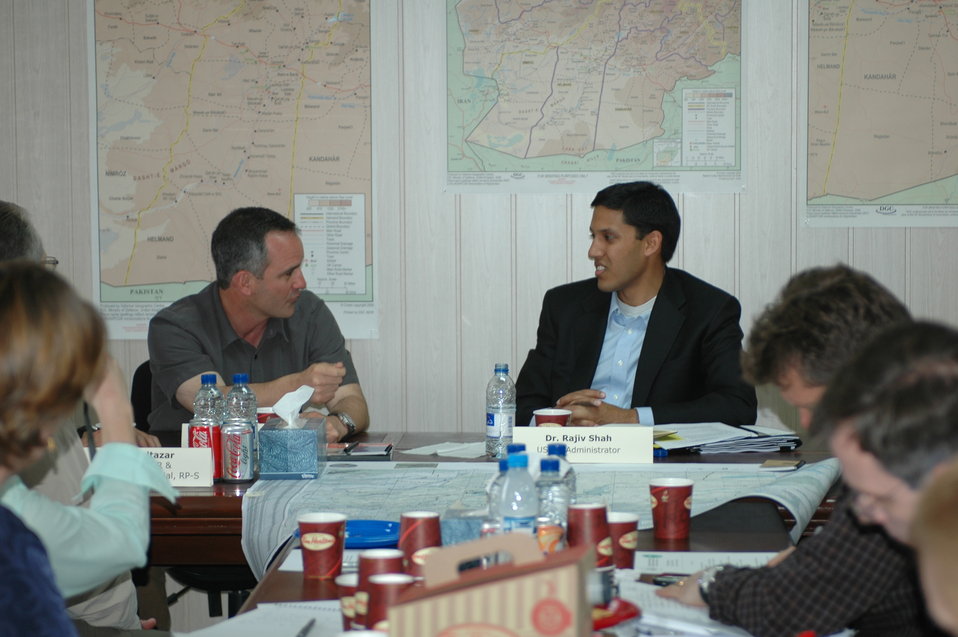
Dr Shah Visits Kandahar April 9, 2010